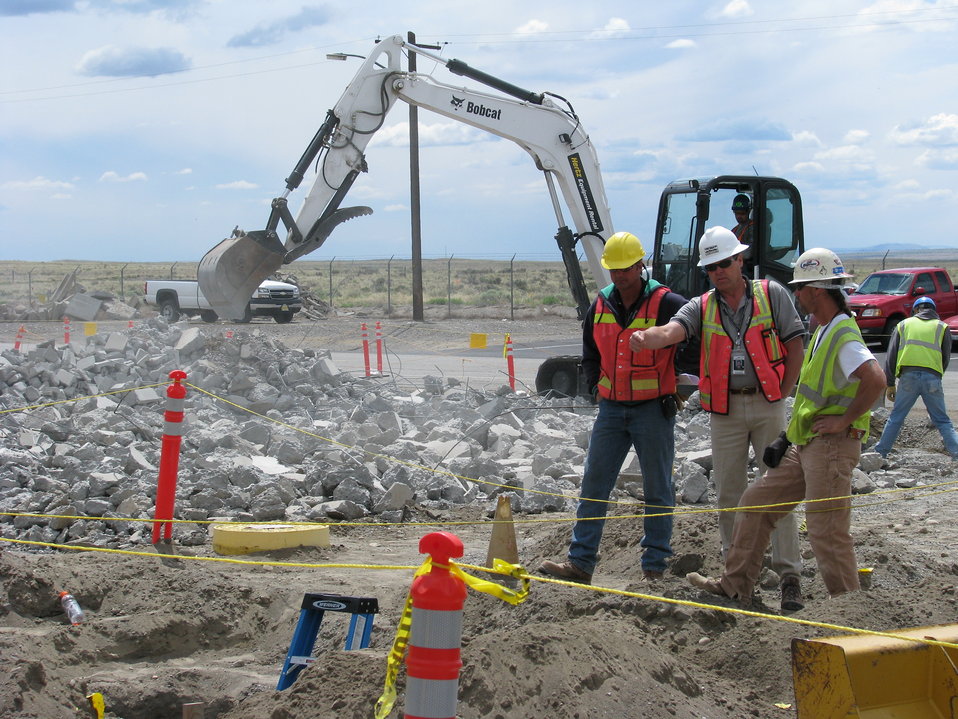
Construction at 222-S